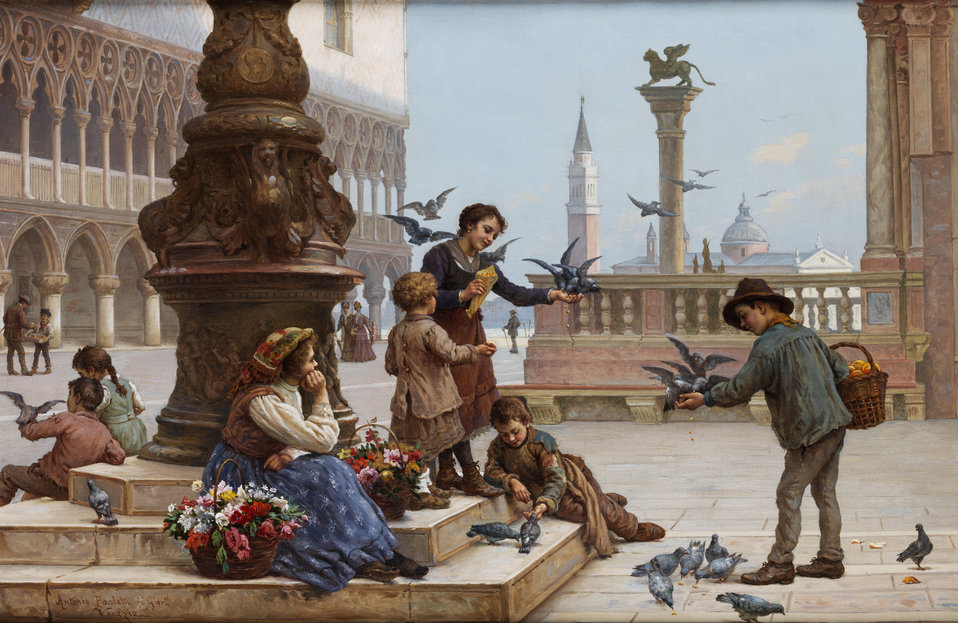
Antonio Ermolao Paoletti Tauben fütternde Kinder in Venedig